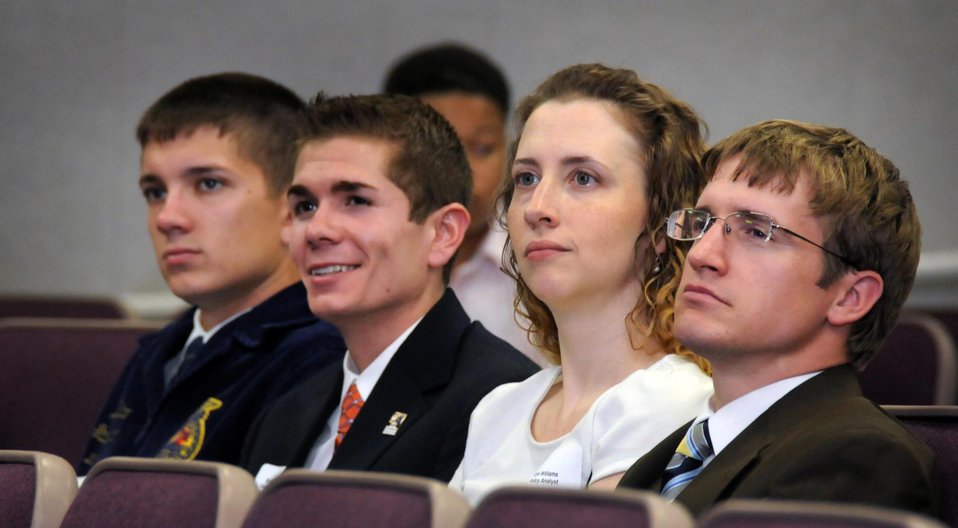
Stakeholders, government and regional leaders listen to Agriculture Deputy Secretary Krysta Harden at the White House Summit on Working Families in Petersburg, VA on Wednesday, Jun. 11, 2014. This forum is part of a series of regionally hosted conversations leading up to the June 23 White House Summit on Working Families, at the Virginia State University, in Petersburg, VA on Wed. June 11, 2014.